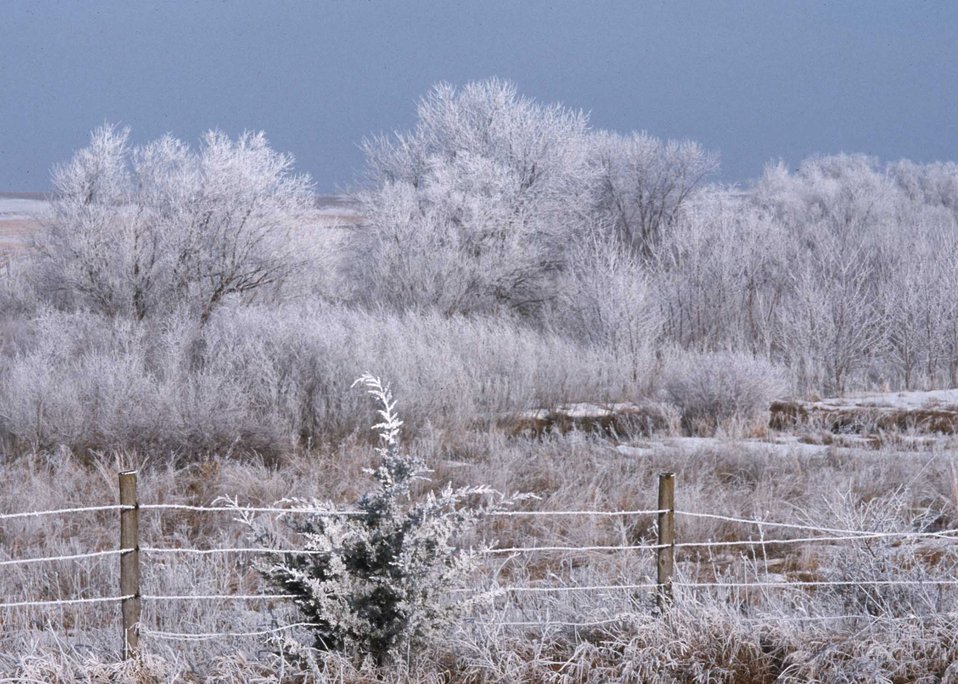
Heavy frost makes a winter wonderland in central Iowa.